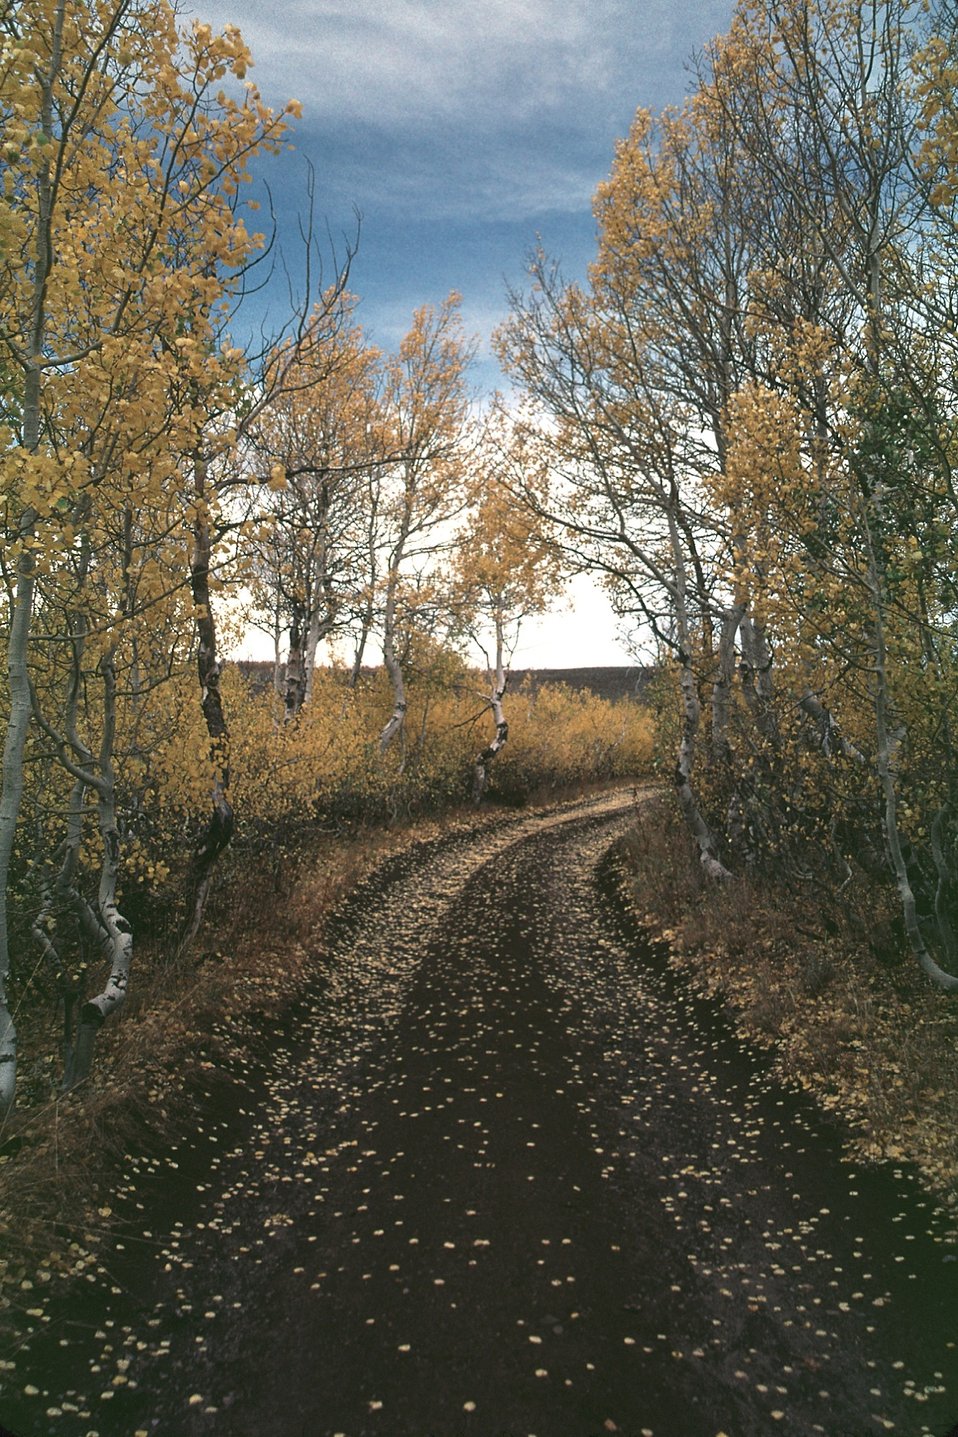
Aspens lining campground road at Fish Lake, Steen's Mountain.